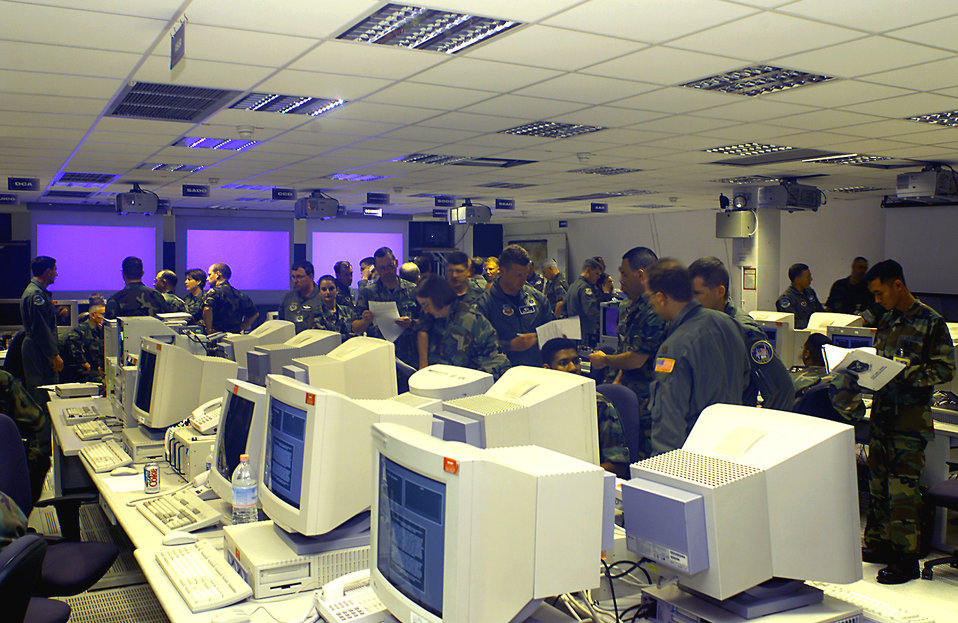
Inside the AOC

RAMSTEIN AIR BASE, Germany -- Airmen plan and execute the air war in the European Theater inside the air operations center here. U.S. Air Forces in Europe's 32nd Air Operations Group is deploying more than 90 airmen to Nellis Air Force Base, Nev., to participate in Red Flag 2003 Oct. 19 to 31. The airmen, from both rated and nonrated specialties, comprise a Falconer AOC, one of five such units in the Air Force. It is the first of its kind to deploy to Nellis to participate in the Air Force's annual airpower combat training exercise.